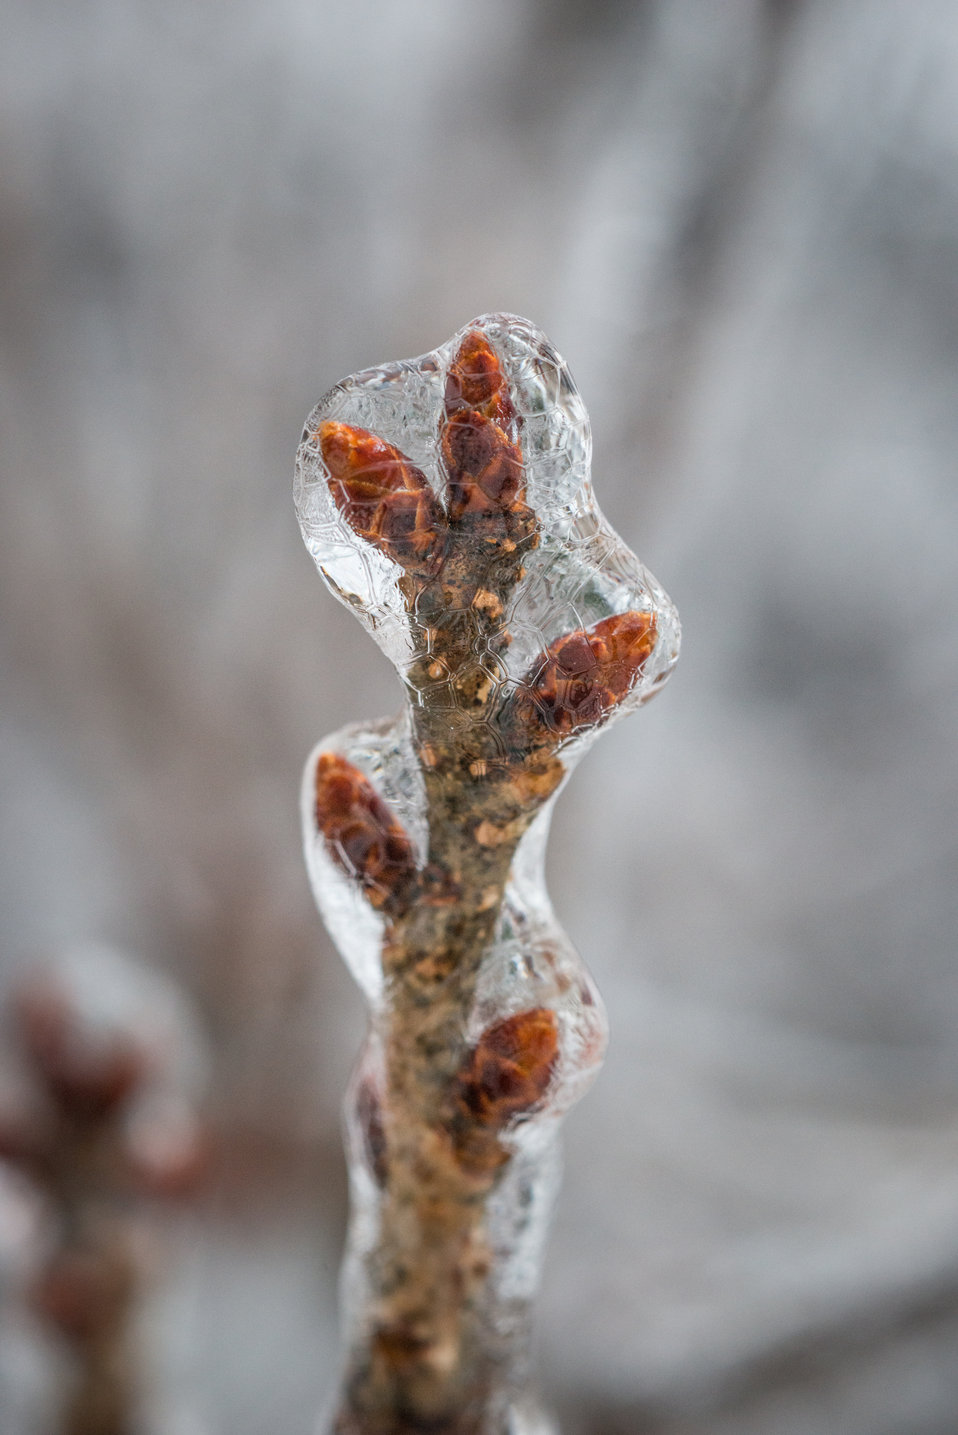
Freezing rain covers plants and trees in Falls Church, VA on Monday, Dec. 9, 2013.